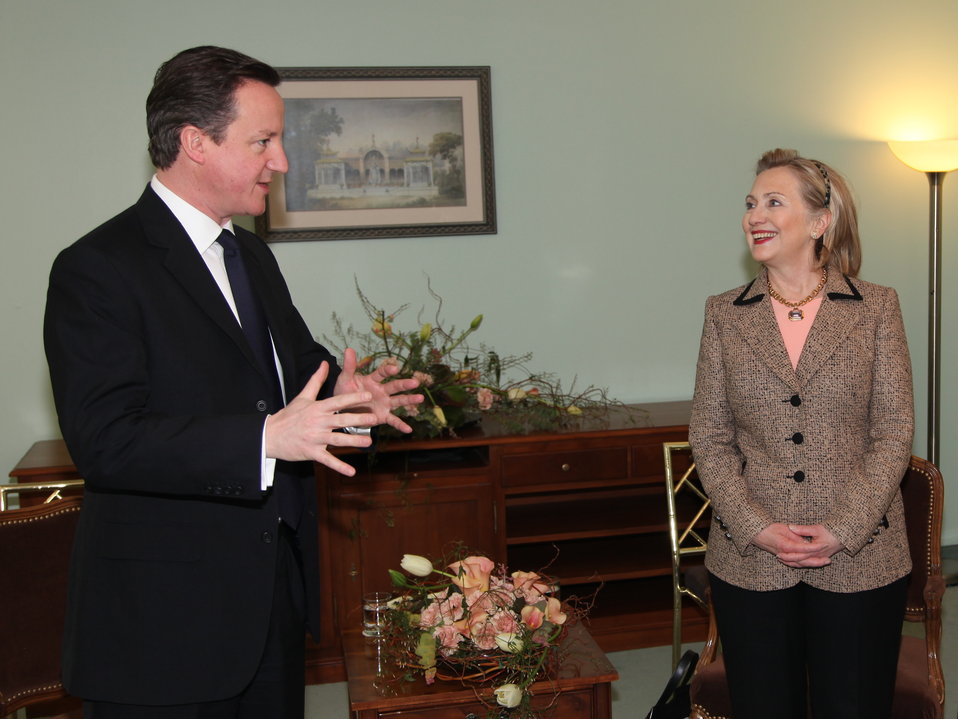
Secretary Clinton Holds a Bilateral Meeting With British Prime Minister Cameron

U.S. Secretary of State Hillary Rodham Clinton holds a bilateral meeting with British Prime Minister David Cameron in Munich, Germany, on February 5, 2011.